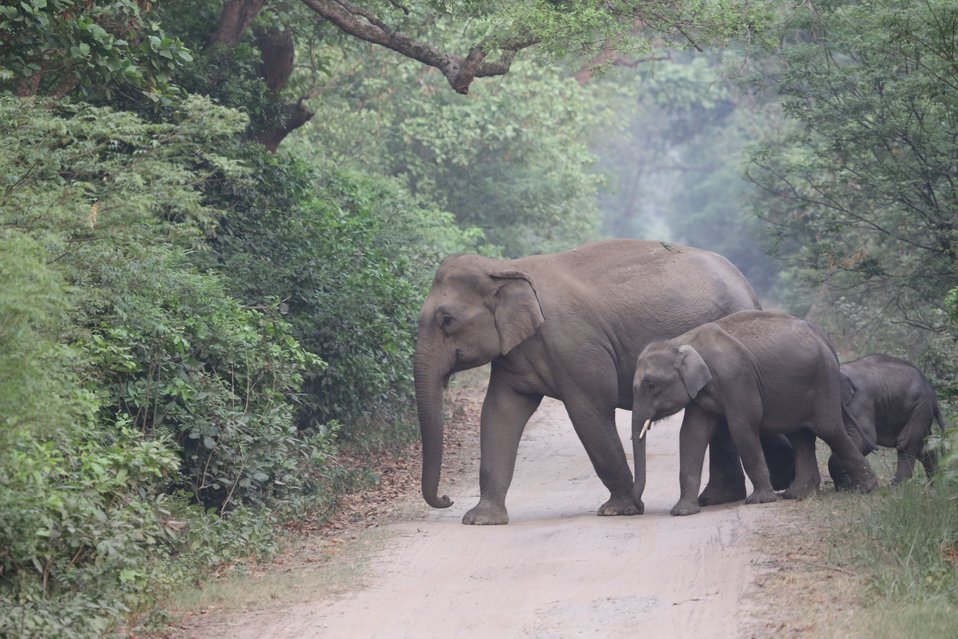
Corbett

In corbett national park.